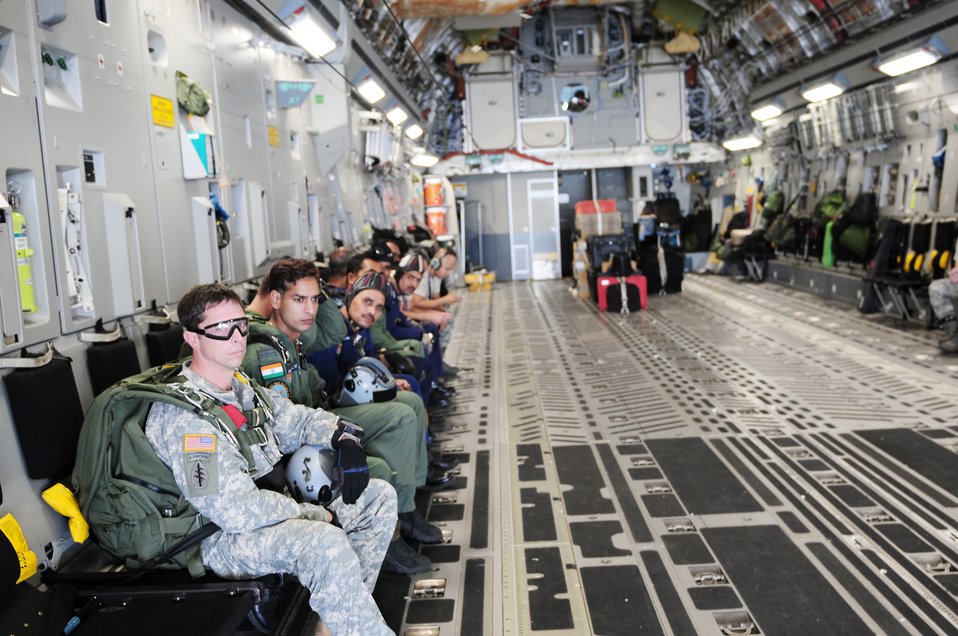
Globemaster conducts first mission for Cope India

Special operations forces from the United States and India prepare to jump out of a C-17 Globemaster III, during the first combined high-altitude low-opening mission of exercise Cope India Oct. 19, 2009. Cope India is a humanitarian assistance disaster relief exercise.